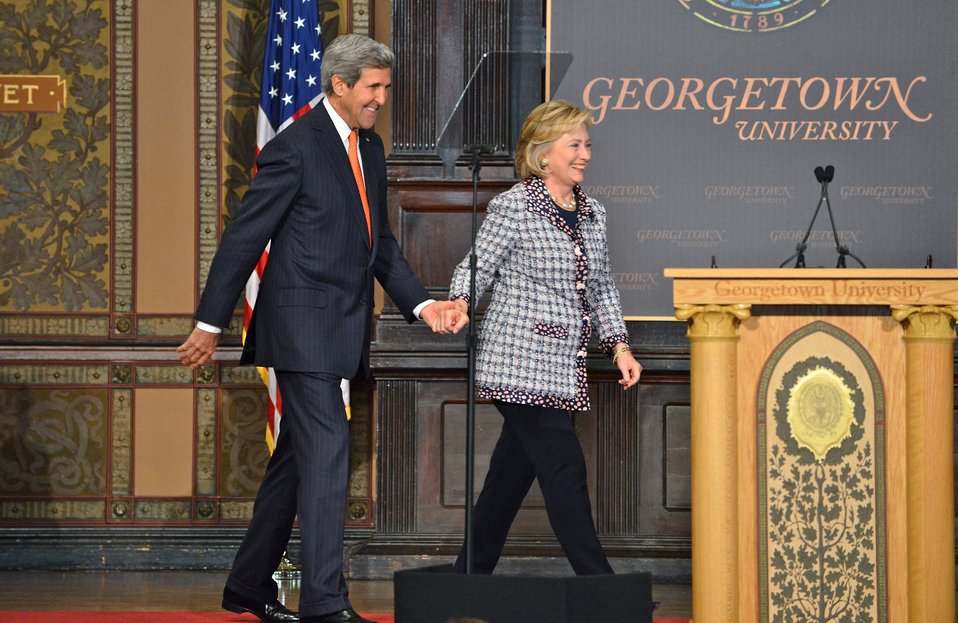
Secretary Kerry and Former Secretary Clinton Share the Stage

U.S. Secretary of State John Kerry and Former U.S. Secretary of State Hillary Clinton share the stage at the Georgetown University Symposium “Advancing Afghan Women: Promoting Peace and Progress in Afghanistan” co-hosted by Former Secretary Clinton and Former First Lady Laura Bush at Georgetown University in Washington, D.C., on November 15, 2013.